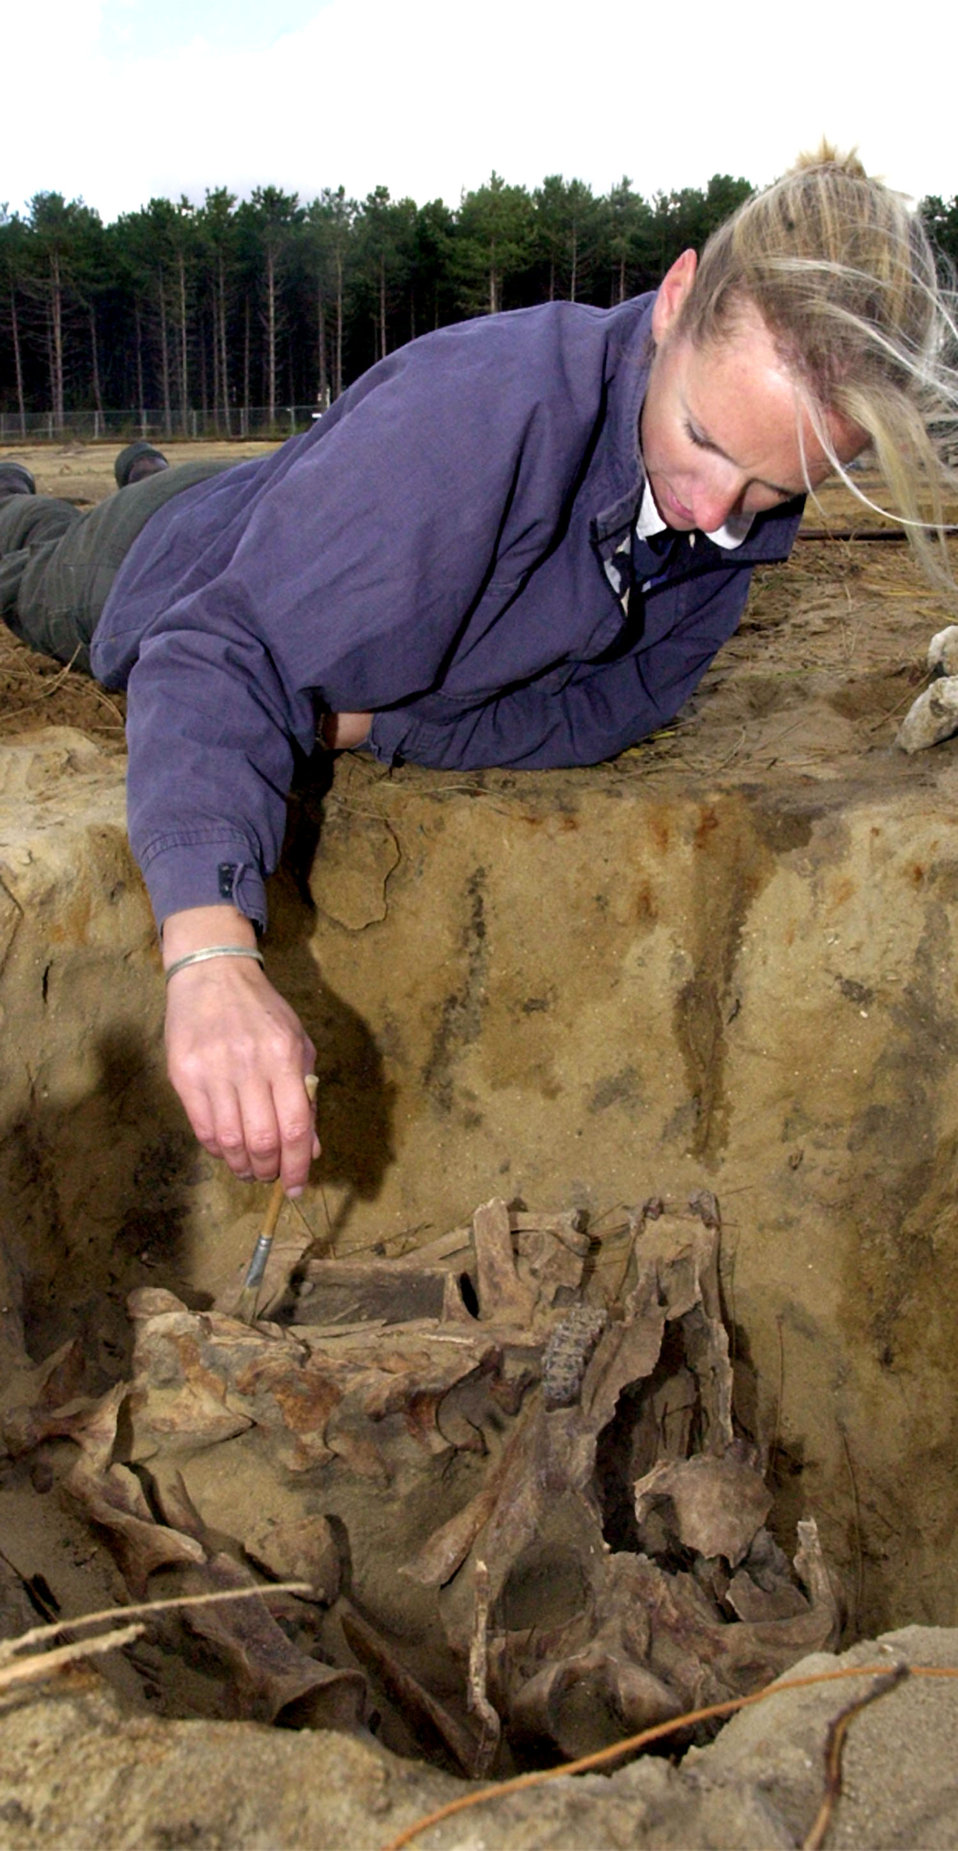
Diggin' it up

ROYAL AIR FORCE MILDENHALL, England -- Clare McClannahan, a field archaeologist, brushes off the surroundings of a horse head found in a grave beneath a structure believed to be an ancient agricultural building here.